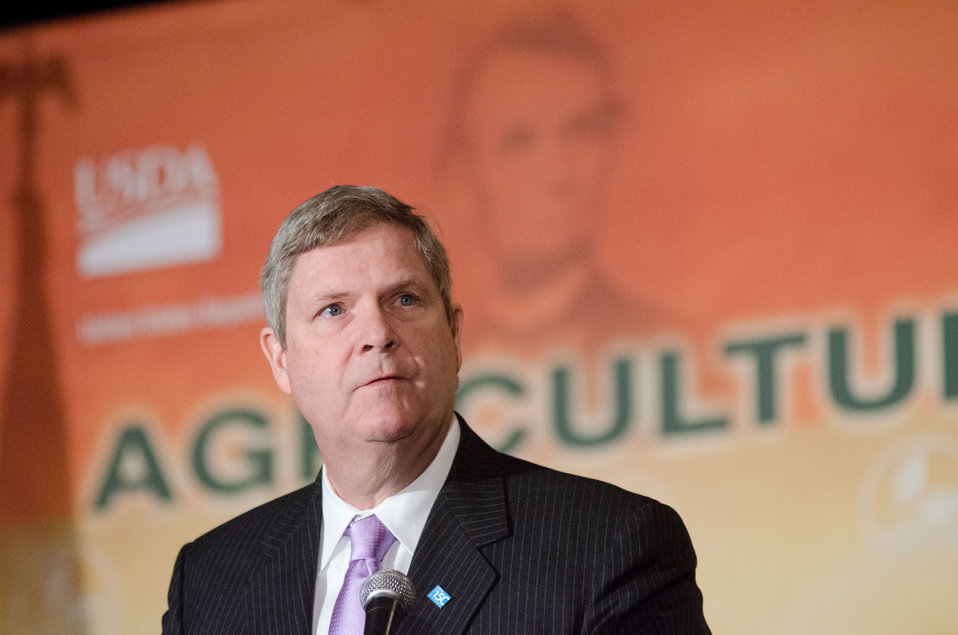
Agriculture Secretary Tom Vilsack makes remarks at the 2012 Agricultural Outlook Forum, “Moving Agriculture Forward” in Arlington, VA., on Thursday, February 23, 2012.